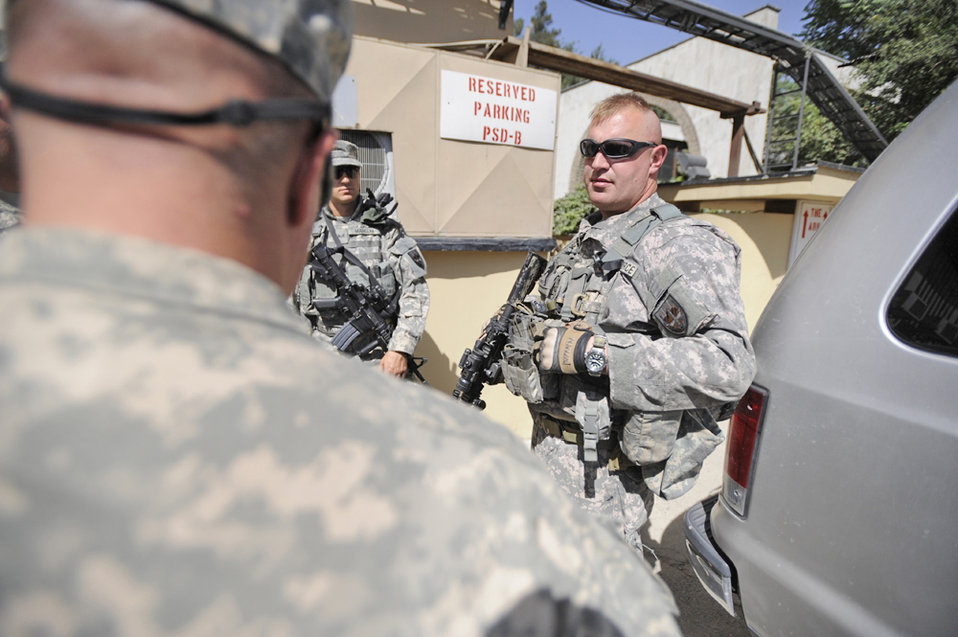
PSD Airmen provide safe transport, protection to senior ranks

Tech. Sgt. Robert Winner speaks with other members of the personal security detail Aug.6, 2009 in Afghanistan. Sergeant Winner is a Combined Security Transition Command-Afghanistan personal security detail shift leader.